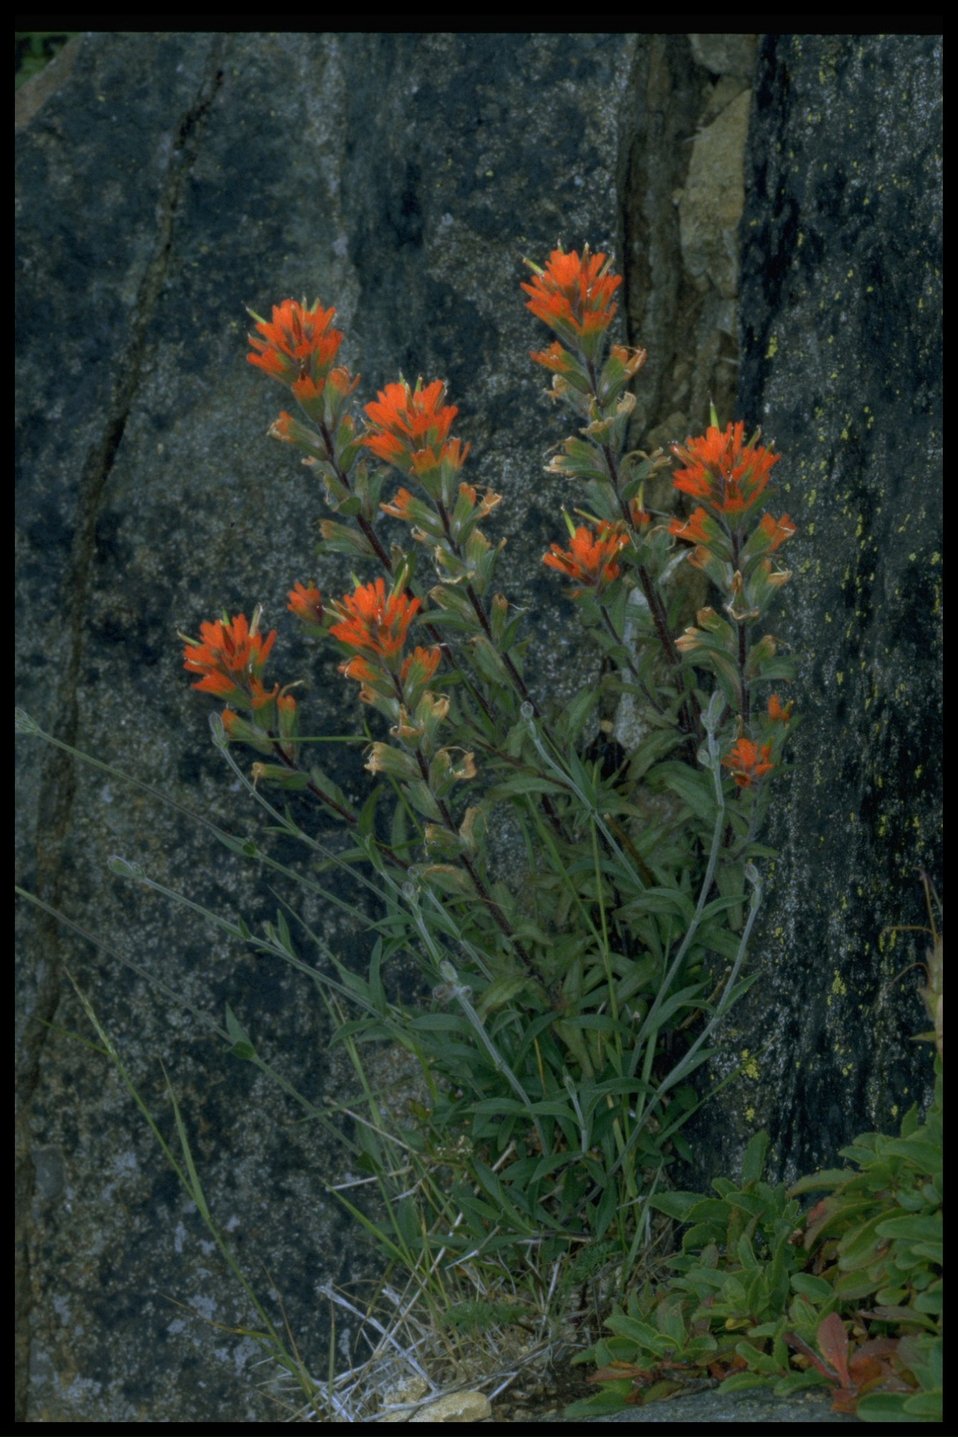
Medium shot of wildflowers (genus Castilleja).